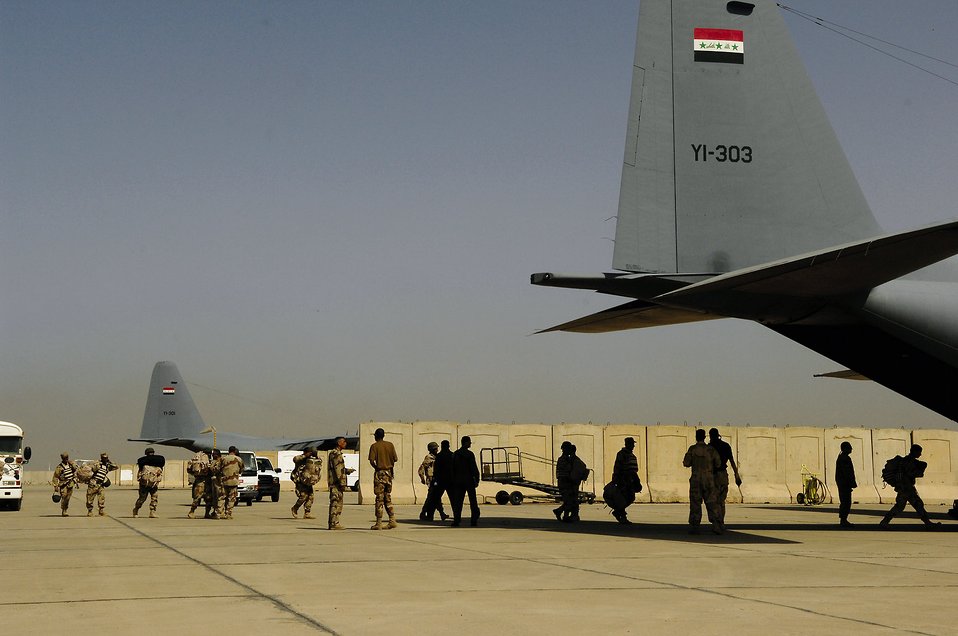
Iraqi air force in the fight

Members of the Iraqi army sit on an Iraqi C-130 Hercules before a March 30 flight to Basra, Iraq, at New Al Muthana Air Base, Iraq. All processing, loading and transporting of the Iraqi troops is being conducted by the Iraqi air force.